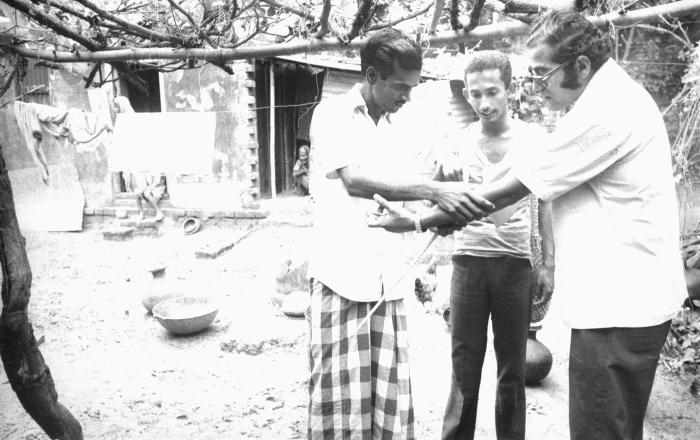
This 1975 image depicted World Health Organization (WHO) epidemiologists Dr. Ali Mourad, and an Egyptian associate watching as Dr. Mourad is 'vaccinated' by a community vaccinator.In 1968, the WHO, and other world public health organizations - led by the United States and the then-Soviet Union - came together to join in the fight to eradicate smallpox from the world.The smallpox vaccine is not given with a hypodermic needle. It is not a shot as most people have experienced. The vaccine is given using a bifurcated (two-pronged) needle that is dipped into the vaccine solution. When removed, the needle retains a droplet of the vaccine. The needle is used to prick the skin a number of times in a few seconds. The pricking is not deep, but it will cause a sore spot and one or two droplets of blood to form. The vaccine usually is given in the upper arm.